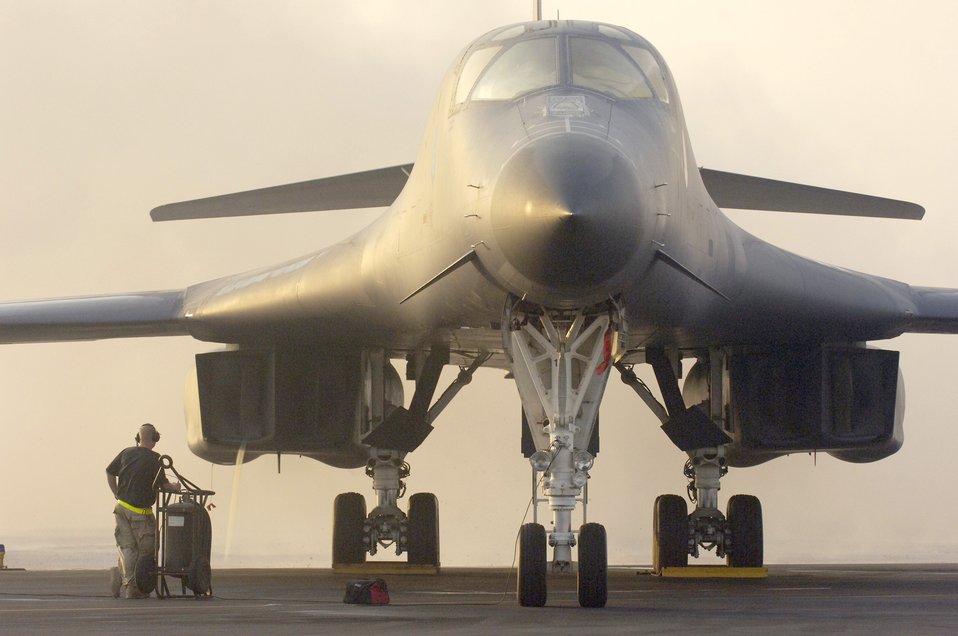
CENTAF airpower summary

B-1B Lancers, similar to this one, are among the various U.S. Central Command Air Forces air assets available for providing air support for International Security Assistance Force troops in contact with enemy forces in Afghanistan. Capable of carrying the largest payload of both guided and unguided weapons in the Air Force inventory, the B-1B can accomplish multiple mission roles in the war on terrorism.